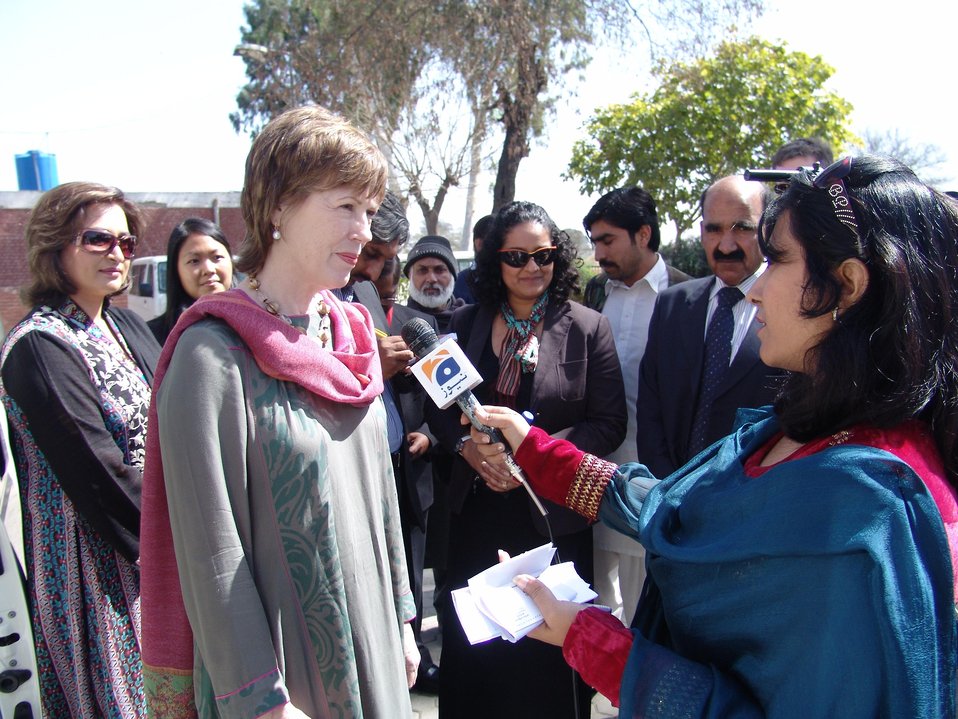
Rural Health Center Care for Mothers and Newborn Children

Gujar Khan, March 6, 2012 – Dr. Marilyn Wyatt, wife of U.S. Ambassador Cameron Munter talking to media.